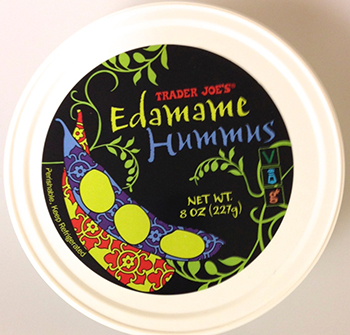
RECALLED – Hummus and dip products

May 19, 2014 – Product Recall – Lansal, Inc. Voluntarily Recalls Hummus & Dip Products Due to Possible Health Risk.